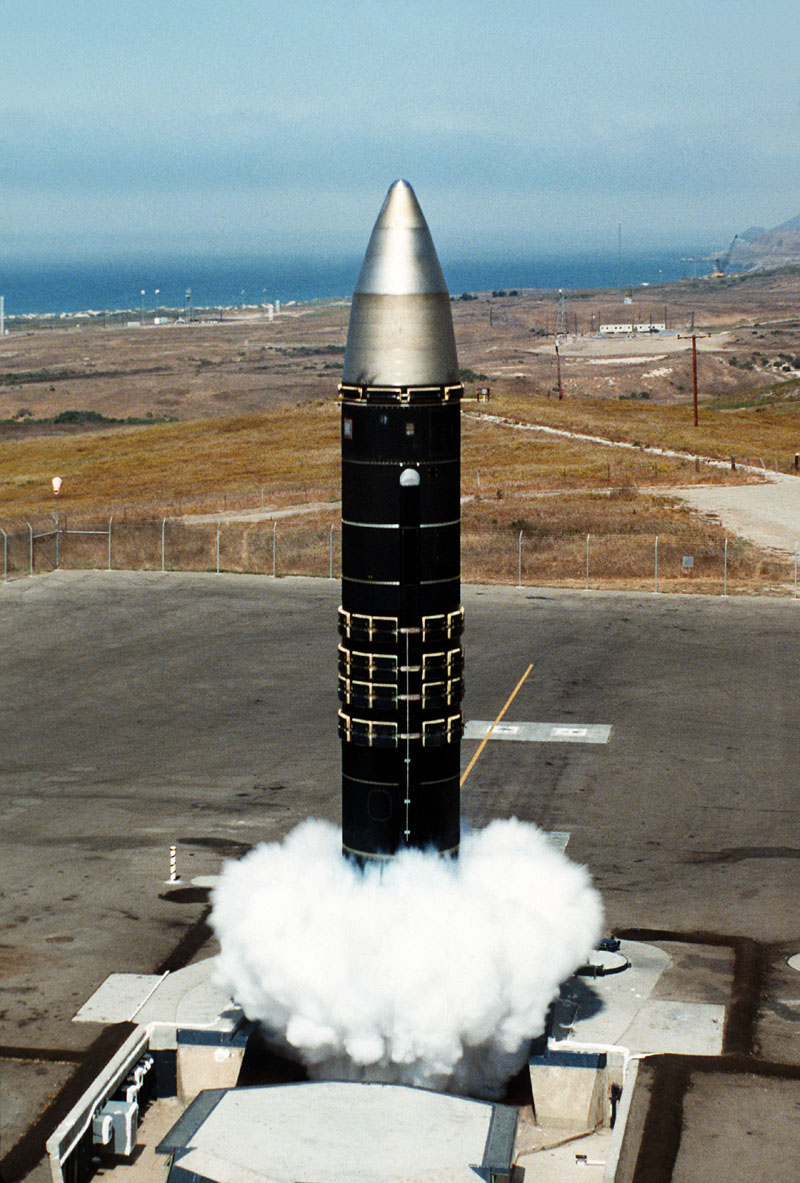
Peacekeeper

FILE PHOTO -- The Peacekeeper missile is America's newest intercontinental ballistic missile. Its deployment fulfilled a key goal of the strategic modernization program and increased strength and credibility to the ground-based leg of the U.S. strategic triad. With the end of the Cold War, the U.S. has begun to revise its strategic policy and has agreed to eliminate the multiple re-entry vehicle Peacekeeper ICBMs by the year 2003 as part of the Strategic Arms Reduction Treaty II.